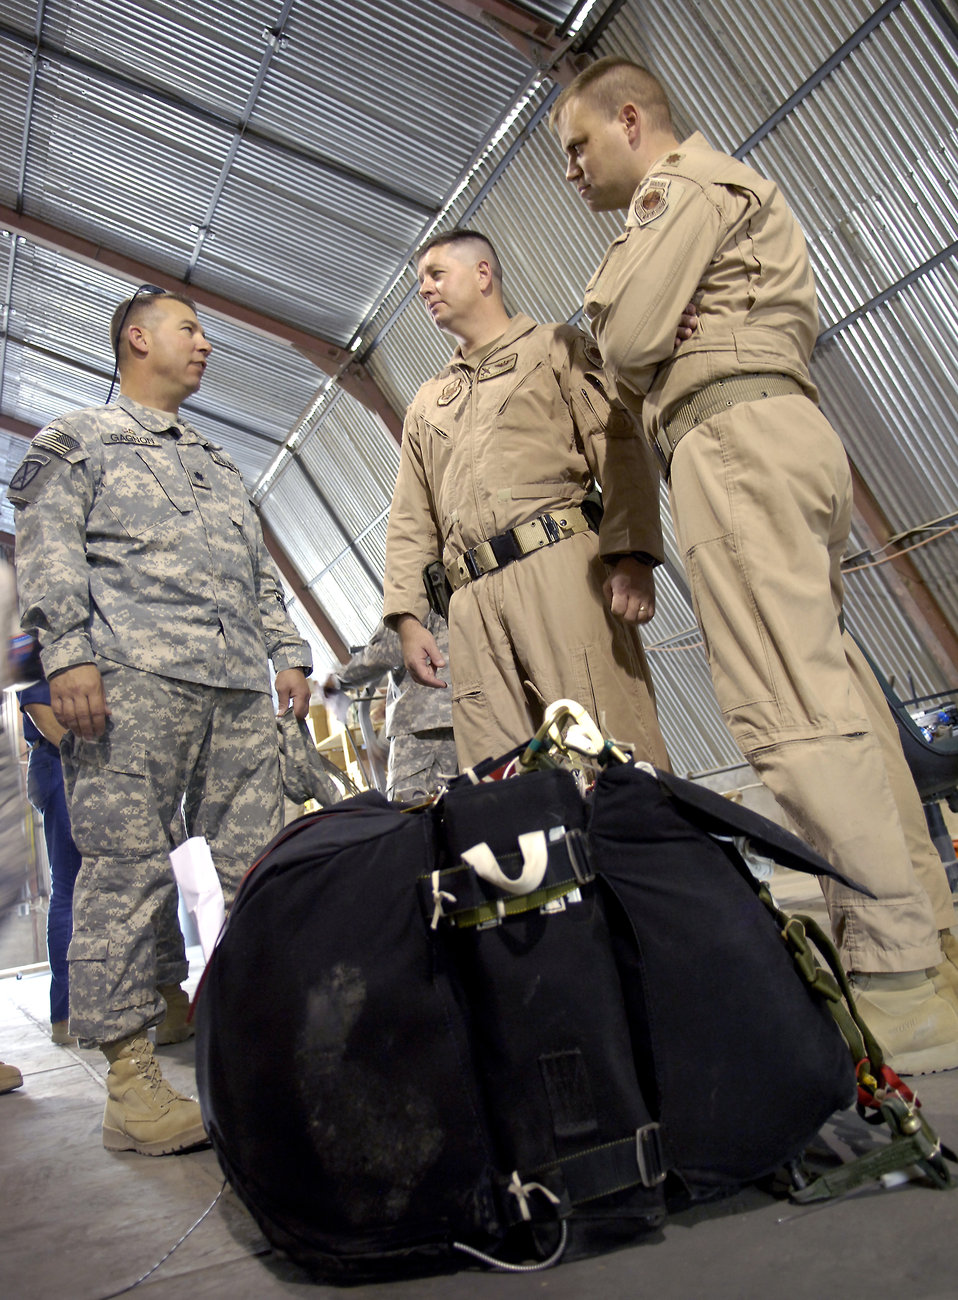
Bagram C-130s drop high-tech cargo delivery system

(From left) Army Lt. Col. Robert Gagnon, Maj. Neil Richardson and Maj. Daniel DeVoe review procedures for testing the new Joint Precision Air Drop System in Afghanistan. The system is designed to deliver airdrop loads to troops on the ground with more precision than the normal airdrop system. Colonel Gagnon is the deputy commander of the 10th Sustainment Brigade. Major DeVoe is the command tactician at the Air Mobility Warfare Center. Major Richardson is the chief of combat programs and policy branch at Air Mobility Command.